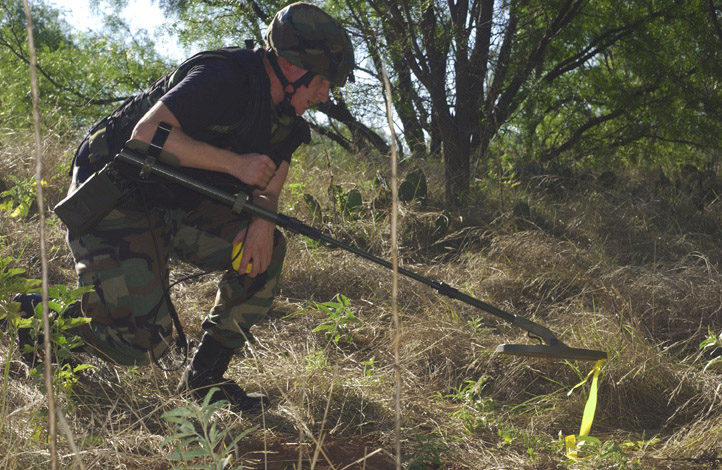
Detector

DYESS AIR FORCE BASE, Texas -- Senior Airman Gregory Talley uses a Vallon metal detector to search for mines or any other ordnance at a simulated weapons cache during readiness training recently. Airman Talley is an explosive ordnance disposal technician with the 7th Civil Engineer Squadron.